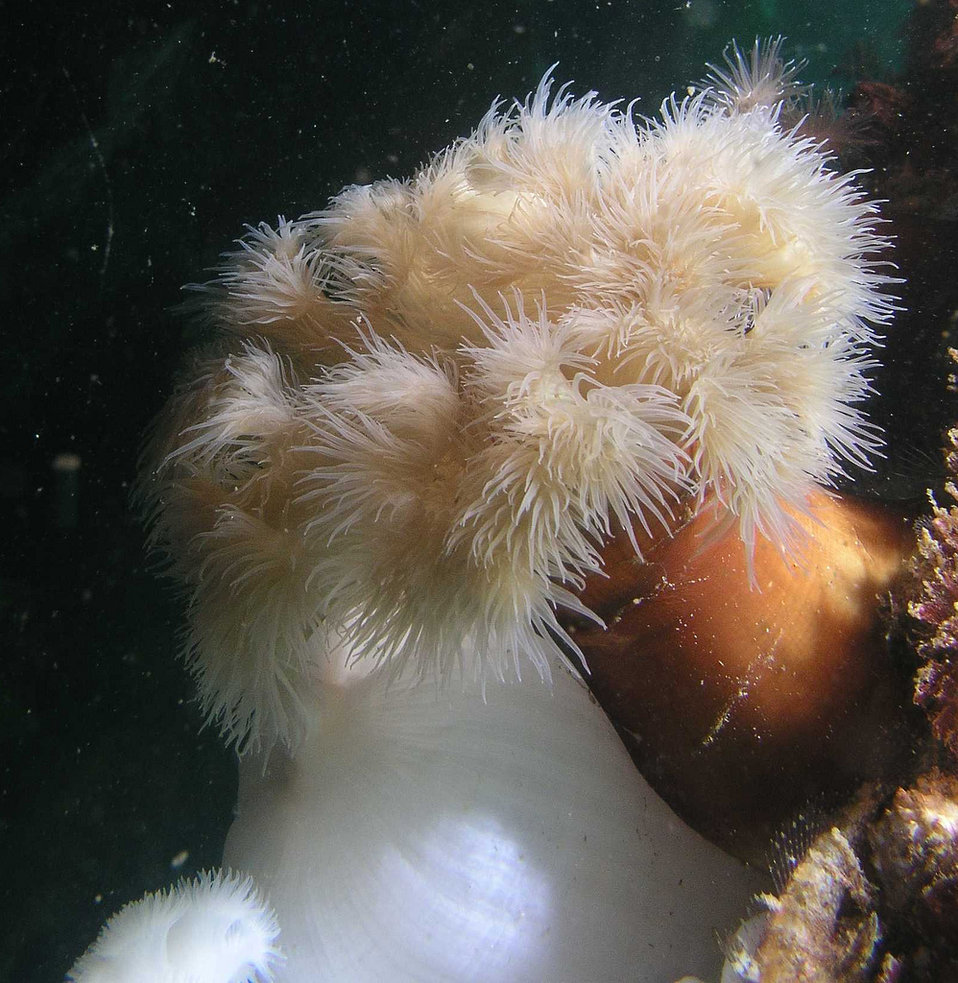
February 2, 2012 Puget Sound, plumose anemone

Several giant plumose anemones (Metridium senile) found a perch on hard bottom material in central Puget Sound.

This filter feeding anemone is one of the many resident invertebrates that EPA's Puget Sound cleanup is working to better protect.

Puget Sound cleanup information: